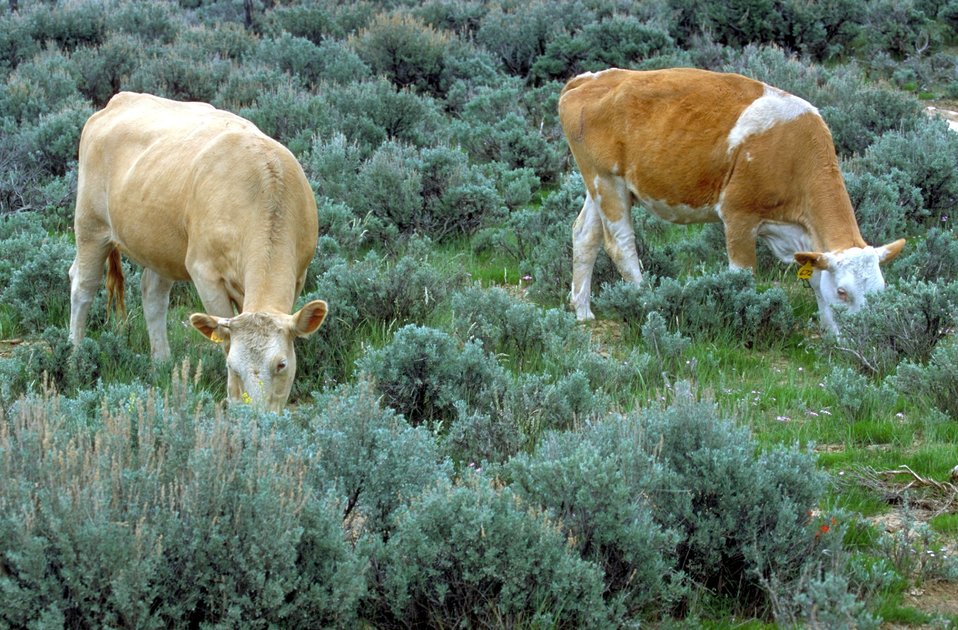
Livestock grazing on BLM lands near Price, Utah.